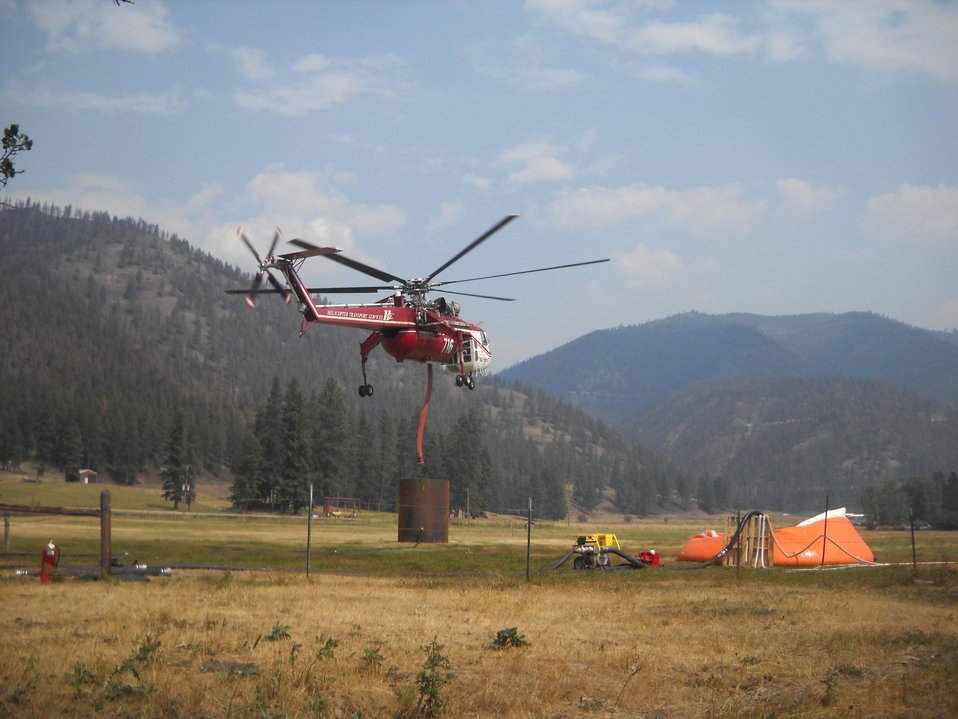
A Sikorsky Skycrane (Type 1 or Heavy Lift helicopter) fills its onboard tank with water or retardant to use against the Lolo Creek Fire. A snorkel is used to replenish the skycrane tanks from a portable dip tanks. The Lolo Creek Fire in the Lolo National Forest near Lolo, MT began on Aug. 18, 2013 by lightning has consumed approximately 10,902 acres and is 60% contained.